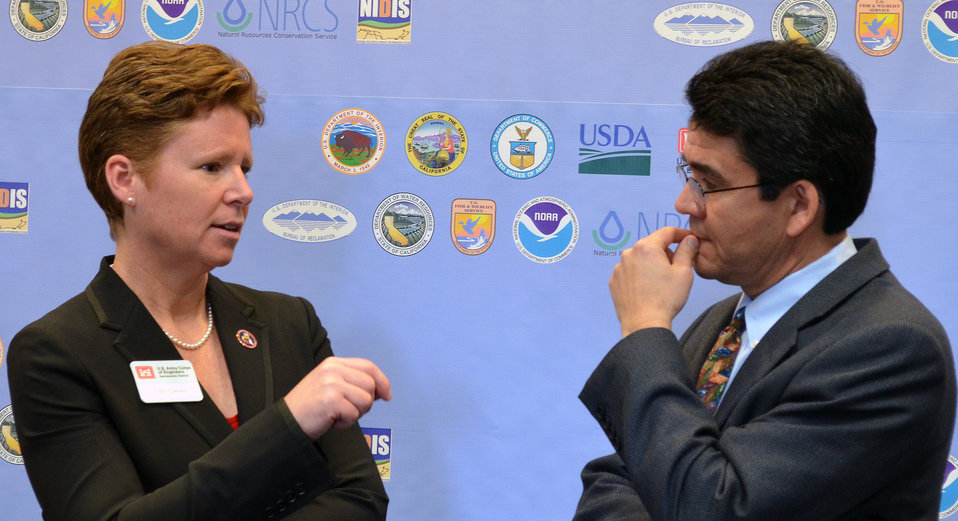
California drought press briefing, Feb. 5, 2014

Traci Clever, director of regional business, U.S. Army Corps of Engineers South Pacific Division, left, shares notes with Michael Connor, commissioner, Bureau of Reclamation, during a Feb. 5 press event highlighting the united efforts by state and federal agencies to address California’s drought.